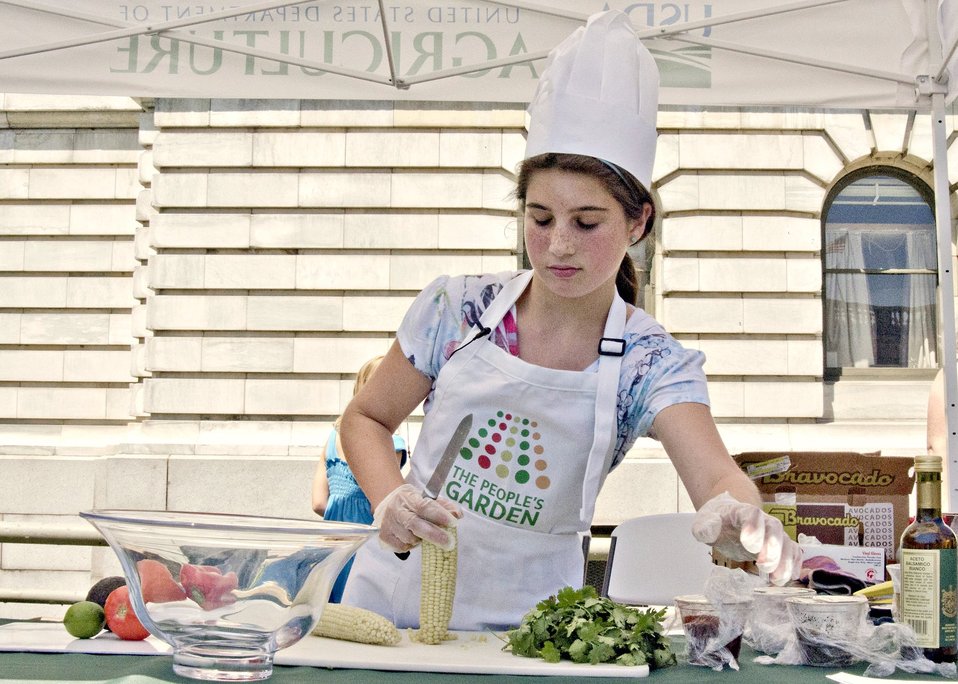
Kid Chef Lily Gravitz prepares Mexican inspired corn salad during her cooking demonstration at the U.S. Department of Agriculture Farmers Market, located in Washington, DC, Friday, July 1, 2011.